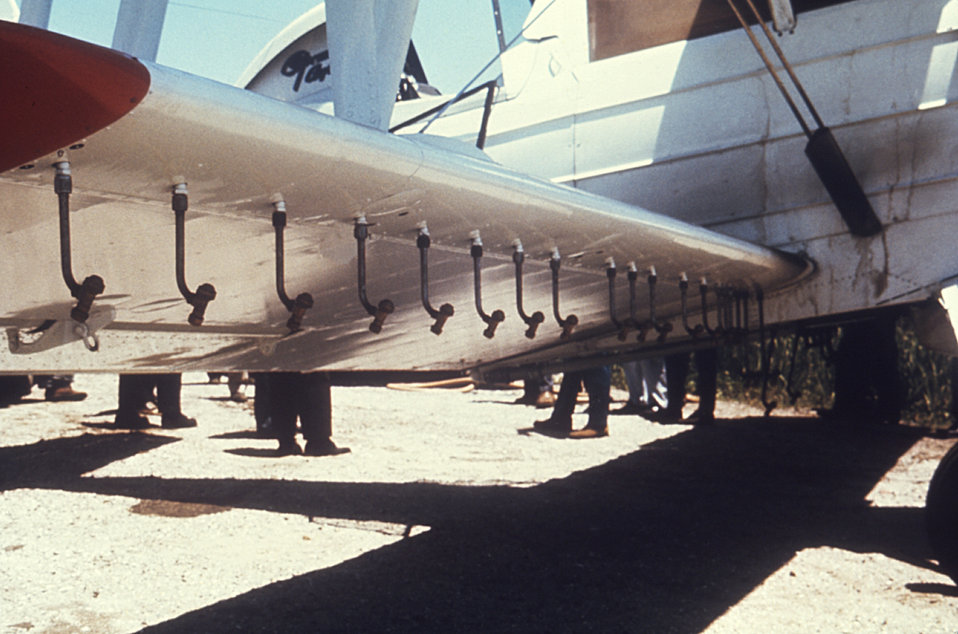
This photograph depicts the orientation of the insecticidal spray nozzles located beneath the spray plane's wings.